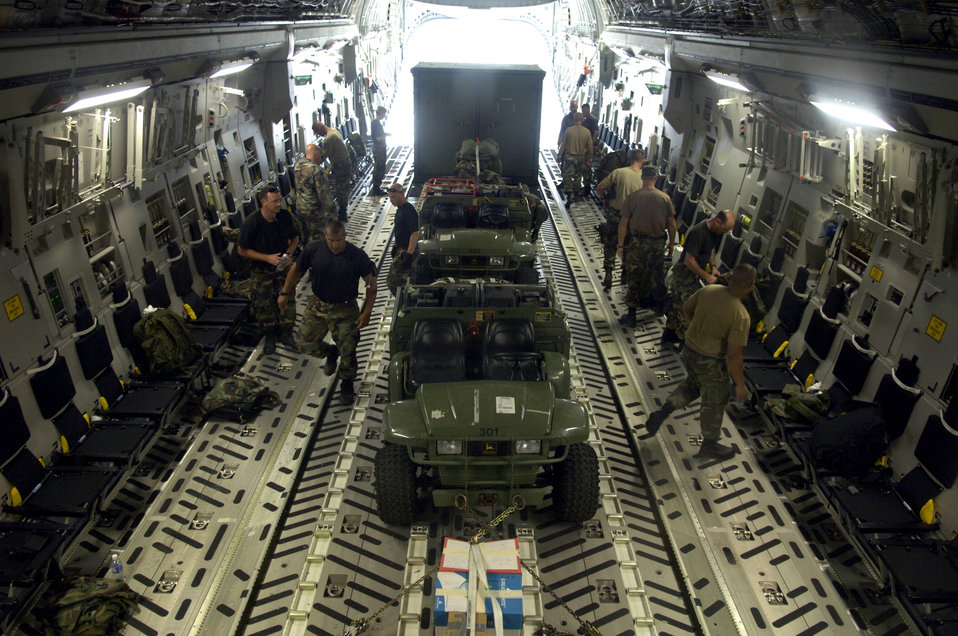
First look at Wake: Less damage than feared

Airmen from the 36th Contingency Response Group load their gear and equipment onto a C-17 Globemaster III on Wake Island Sept. 12. The C-17, from the 535th Airlift Squadron at Hickam Air Force Base, Hawaii, is taking the 36th CRG back home to Andersen Air Force Base, Guam. The 36th CRG was the initial assessment team on the island to survey the airfield after the island was hit by Super Typhoon Ioke Aug. 31.